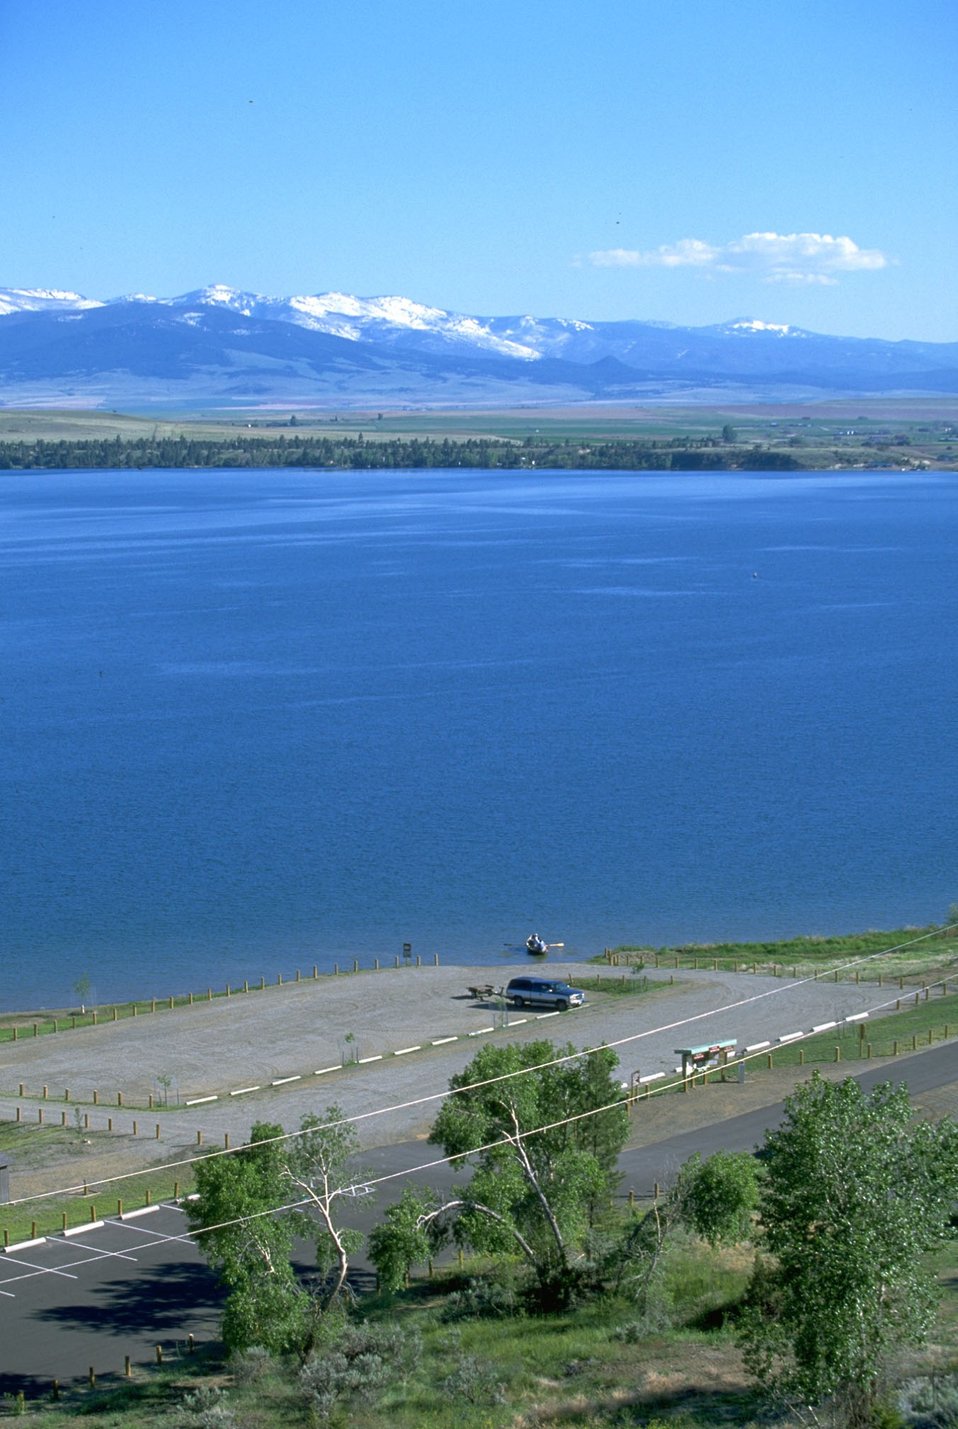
Scenic view of snow-capped mountains, Hauser Lake, and the parking lot of Clark's Bay Day Use Area